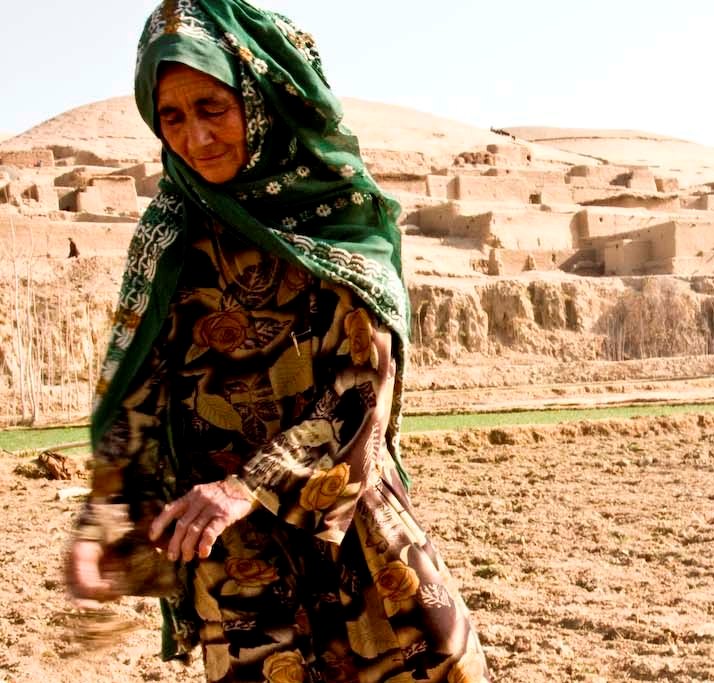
AVIPA 1